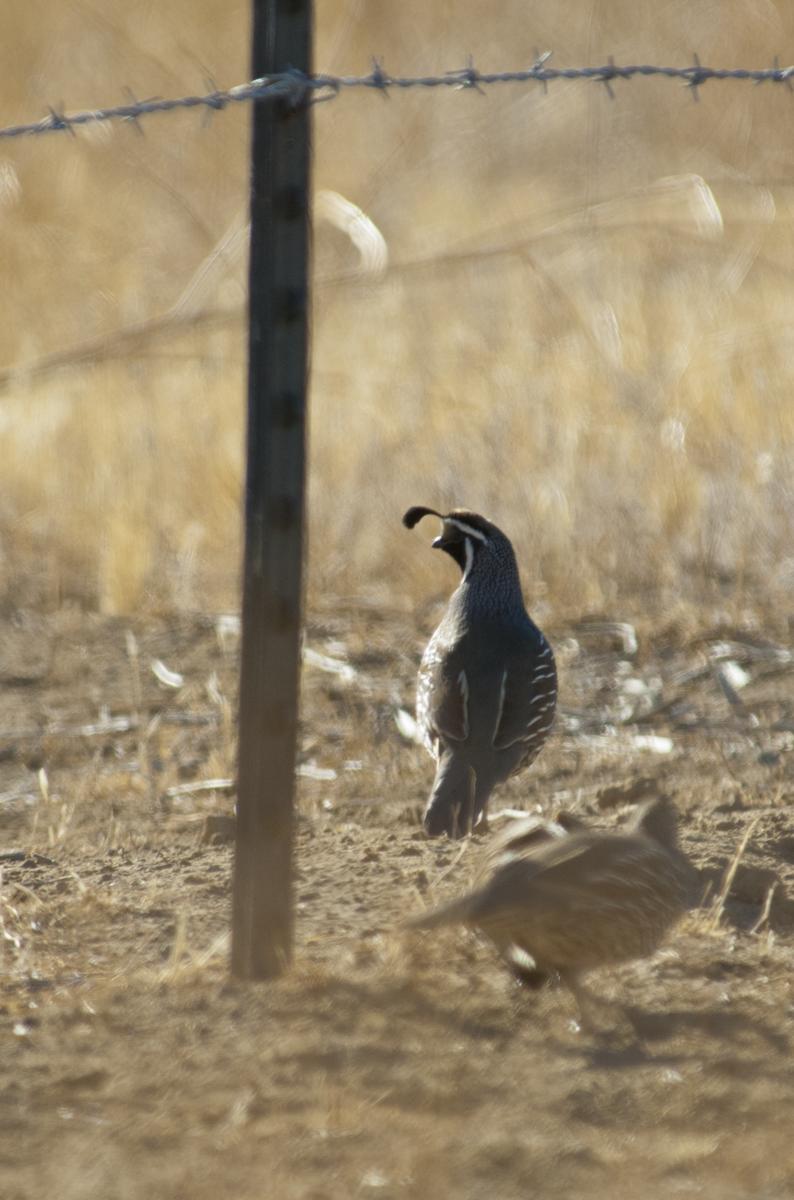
California Quail, Carrizo Plain